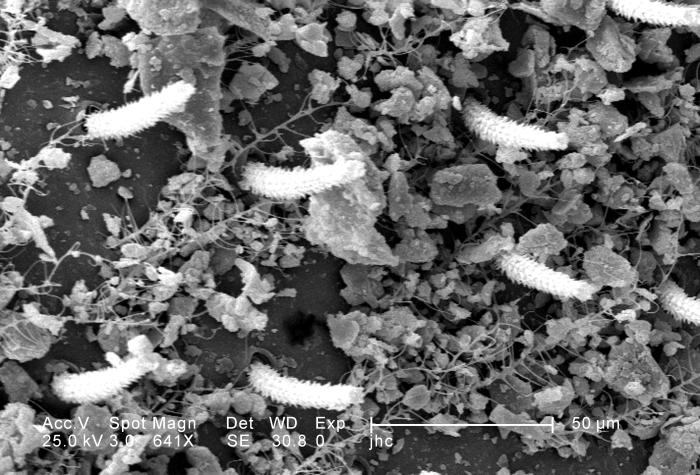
Under a moderately-high magnification of 641X, this scanning electron micrograph (SEM) depicted the exoskeletal surface of a larval staged antlion, sometimes referred to as a 'doodlebug', because of the trails it leaves in the soft sand as it hunts for prey. This arthropod, i.e., jointed legs, undergoes dramatic morphologic changes when it metamorphoses into a beautiful flying antlion lacewing.